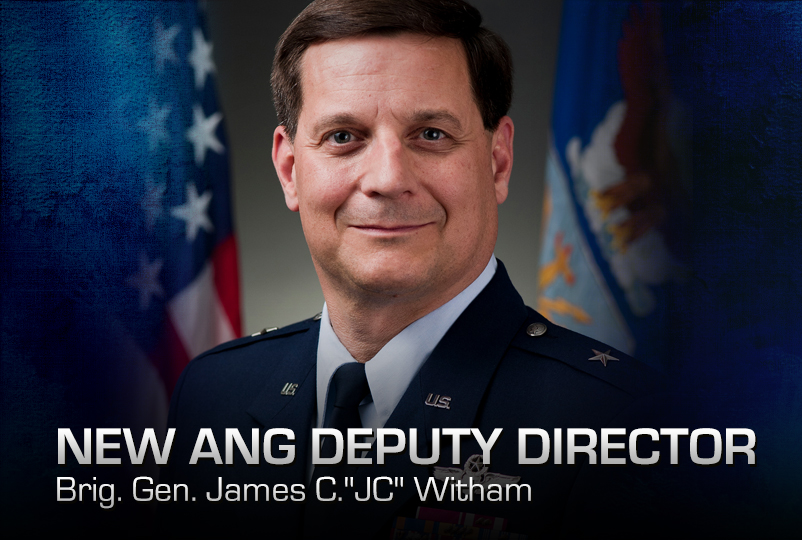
New ANG Deputy Director